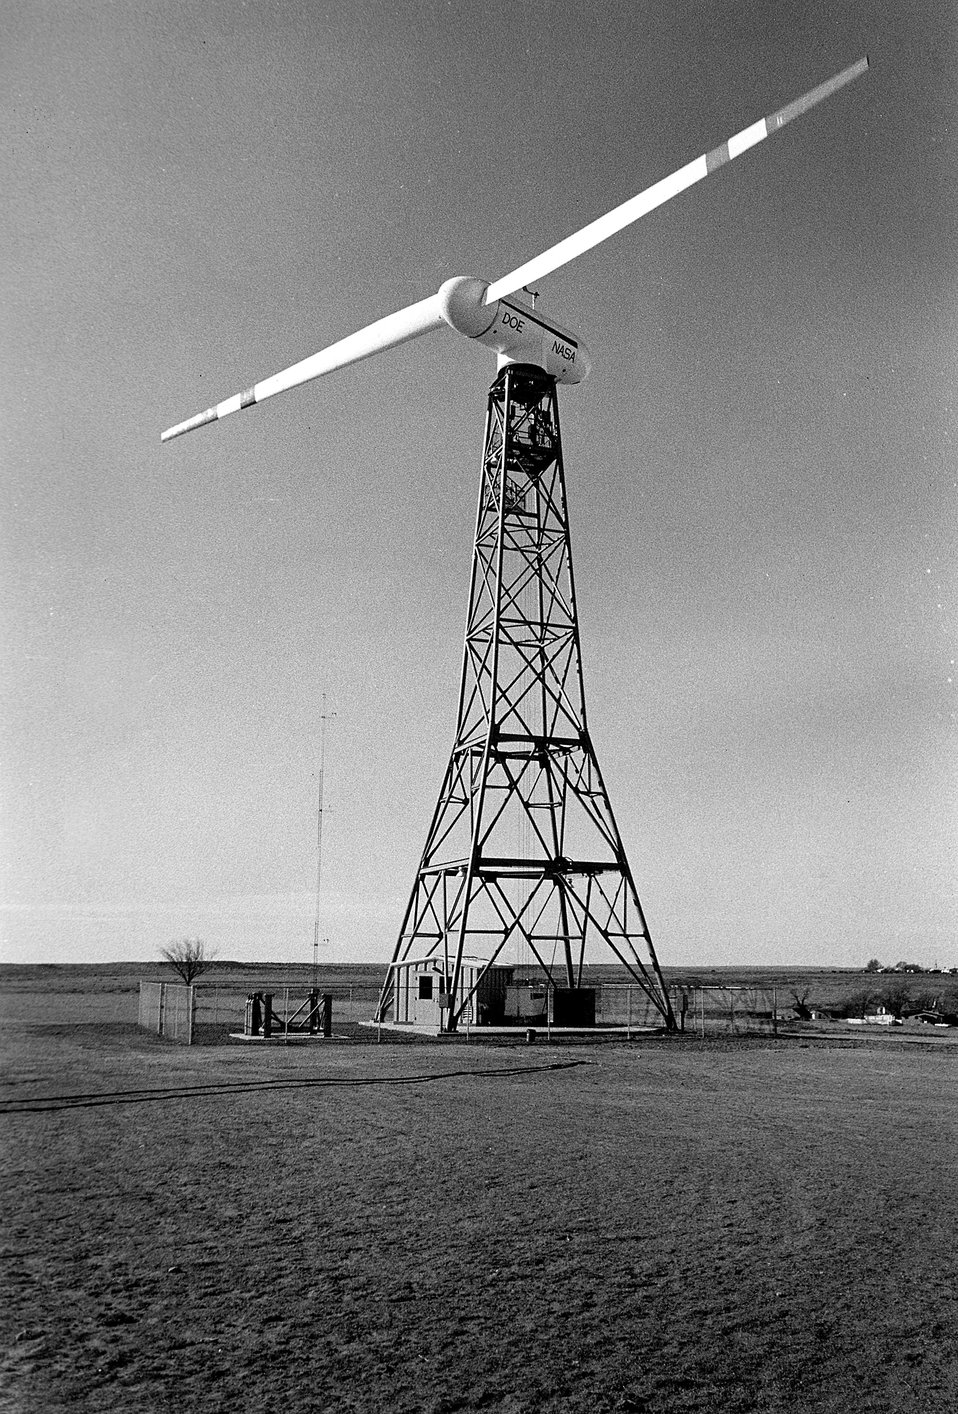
A large wind turbine generator is supplying part of the electric power used by the people of Clayton, New Mexico. c. 1978